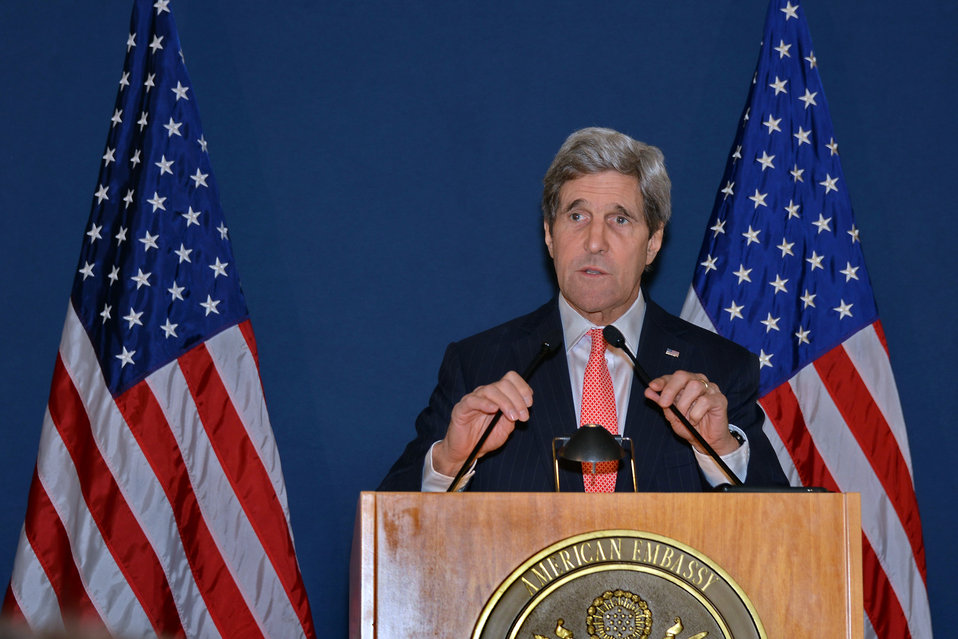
Secretary Kerry Addresses Reporters in Rome

U.S. Secretary of State John Kerry addresses reporters after meetings on Libya and Ukraine in Rome, Italy, on March 6, 2014.